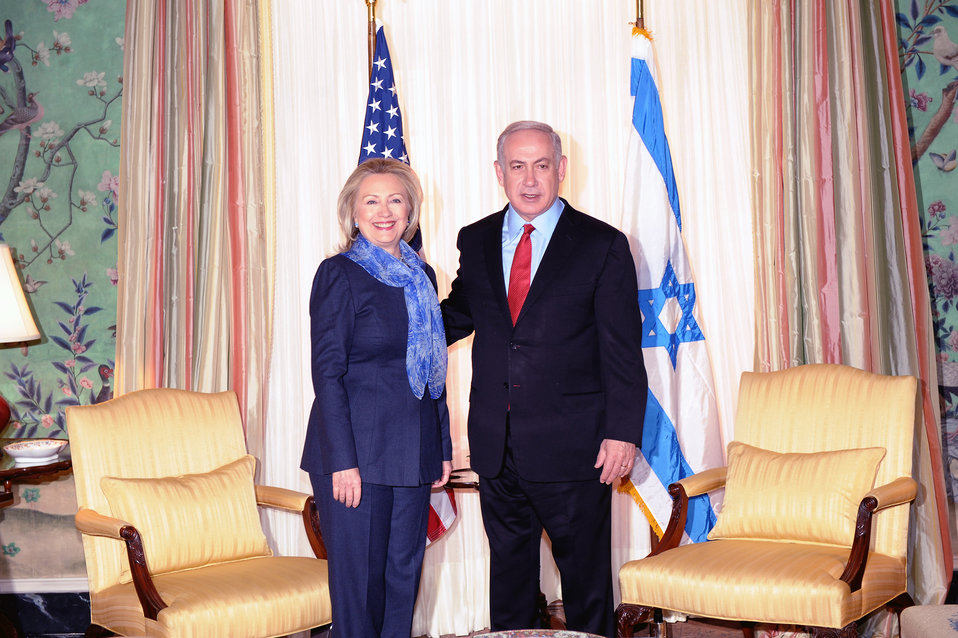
Secretary Clinton Meets With Israeli Prime Minister Netanyahu

U.S. Secretary of State Hillary Rodham Clinton meets with Israeli Prime Minister Benjamin Netanyahu at the Blair House in Washington, D.C., on March 6, 2012.